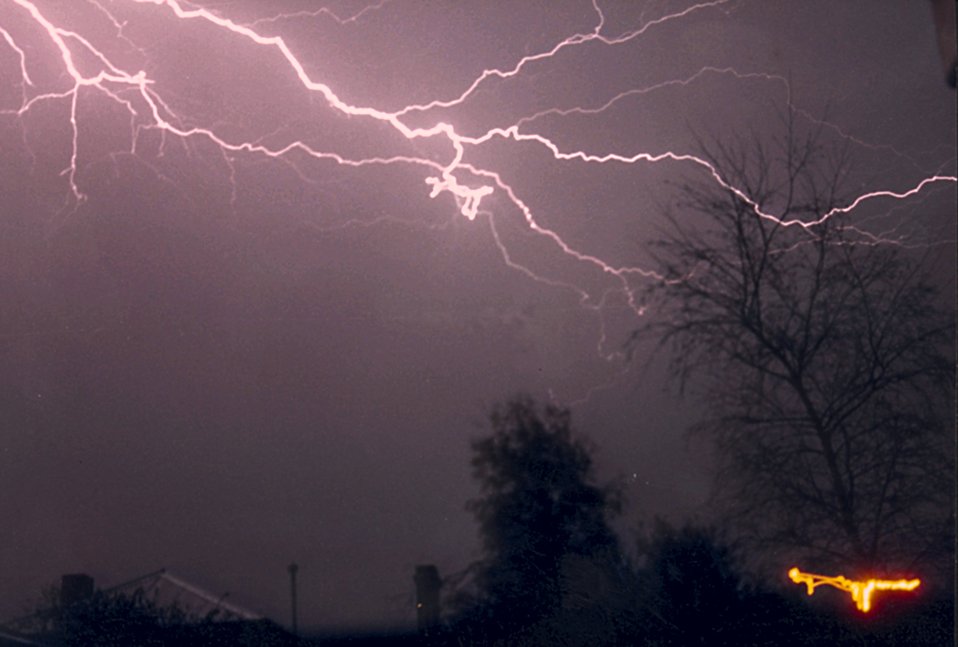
Many of Mr. Lear's lightning photographs are taken from the roof of his home. He has an array of six cameras that can be activated simultaneously in order to capture lightning images. These six cameras span the horizon. Mr. Lear is a welder by trade and has taken lightning photographs for many years as a hobby.